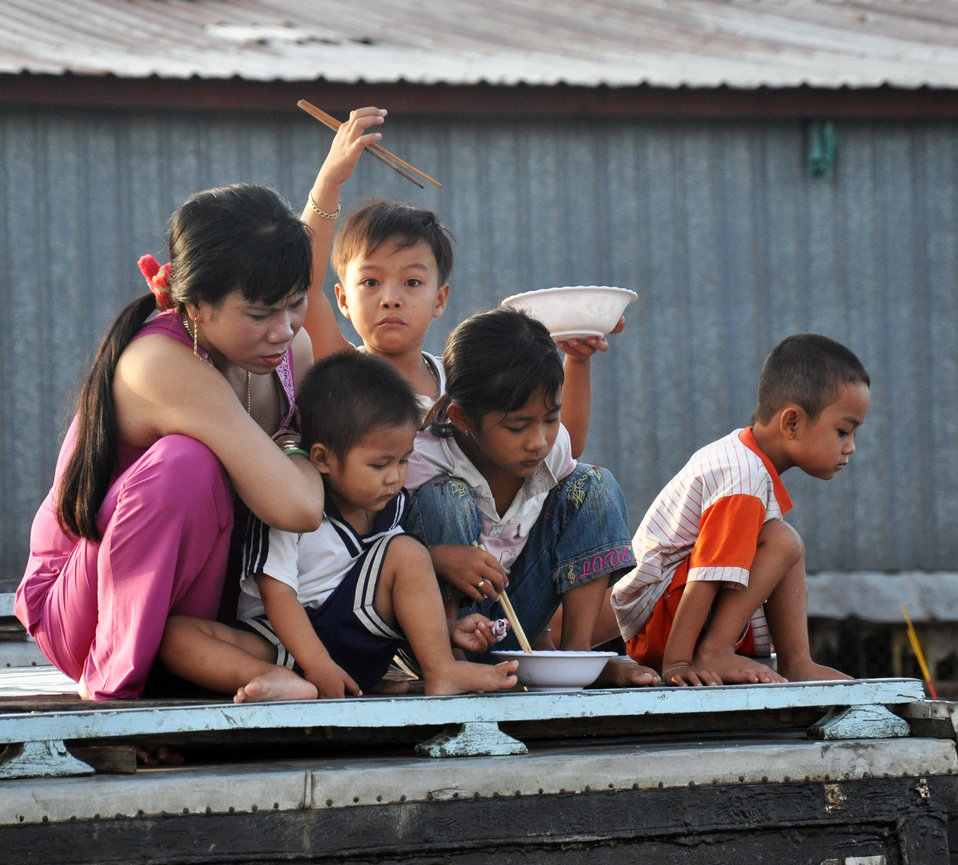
Views from Can Tho's Floating Market